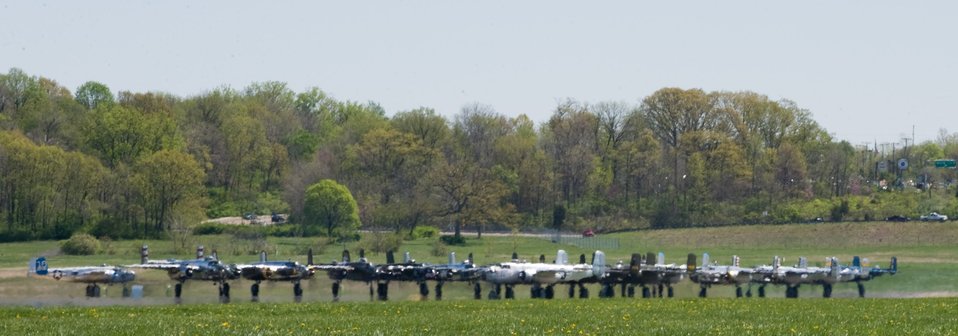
68th Reunion of Doolittle Raiders

Heatwave from the ground creates a mirage effect on the view of 17 B-25 Mitchell bombers at the National Museum of the U.S. Air Force at Wright-Patterson Air Force Base, Ohio are being ready to take off for a formation flyover prior to the Doolittle Raiders Memorial Service in the museum's Memorial Park on April 18, 2010. This is one of the largest gatherings of the Mitchell Bombers since the historic raid over Tokyo, Japan during World War II.